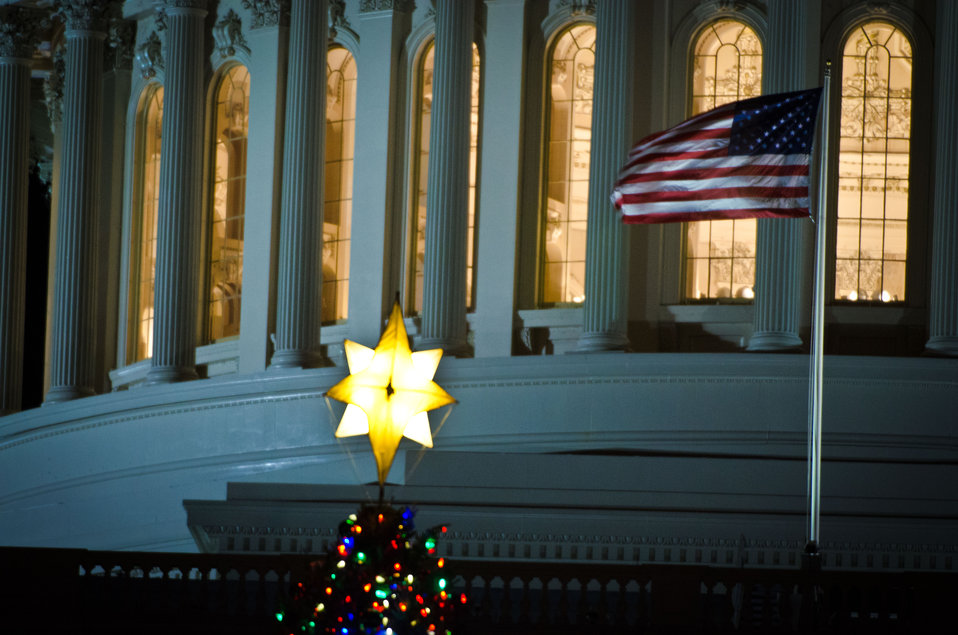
The lights of the 2012 U.S. Capitol Christmas Tree from the Blanco Ranger District of the White River National Forest near Meeker, CO; and decorated with hand-made ornaments, was switched on by Colorado Springs high school student Ryan Shuster and House Speaker John Boehner, on Tuesday, Dec. 4, 2012 at the U.S. Capitol in Washington, D.C. Since November, the tree visited dozens of cities across the country as it made its way arriving here on Nov.26, 2012. The 73-foot Englemann spruce traveled from the White River National Forest in Colorado. Other representatives as well as Natural Resources and Environment Under Secretary Harris Sherman spoke during the ceremony.